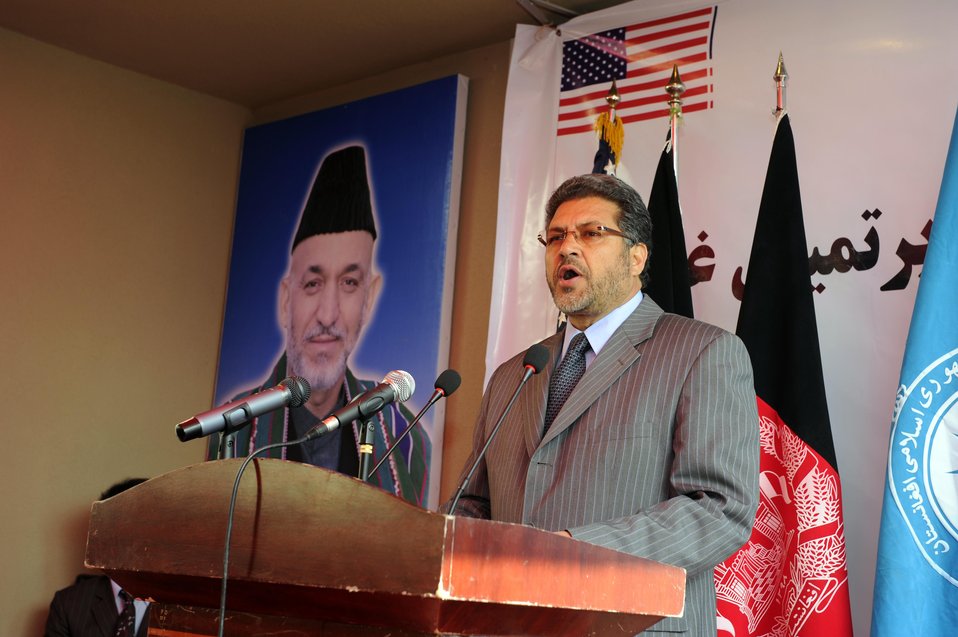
Afghan Minister of Education Abdul Rahim Wardak gives remarks at the inauguration of the Ghazi School.

U.S. Deputy Ambassador to Afghanistan James B. Cunningham, Afghan Minister of Education Abdul Rahim Wardak and visitng former U.S. Ambassador to Afghanistan Zalmai Khalilzad officially inaugurated the newly rebuilt Ghazi High School in West Kabul October 23, 2011. Former alumni of the school include both Ambassador Khalilzad and Afghan President Hamid Karzai. The school was destroyed during 30 years of fighting in Afghanistan, and was refurbished by the U.S. Agency for International Development. (Department of State)